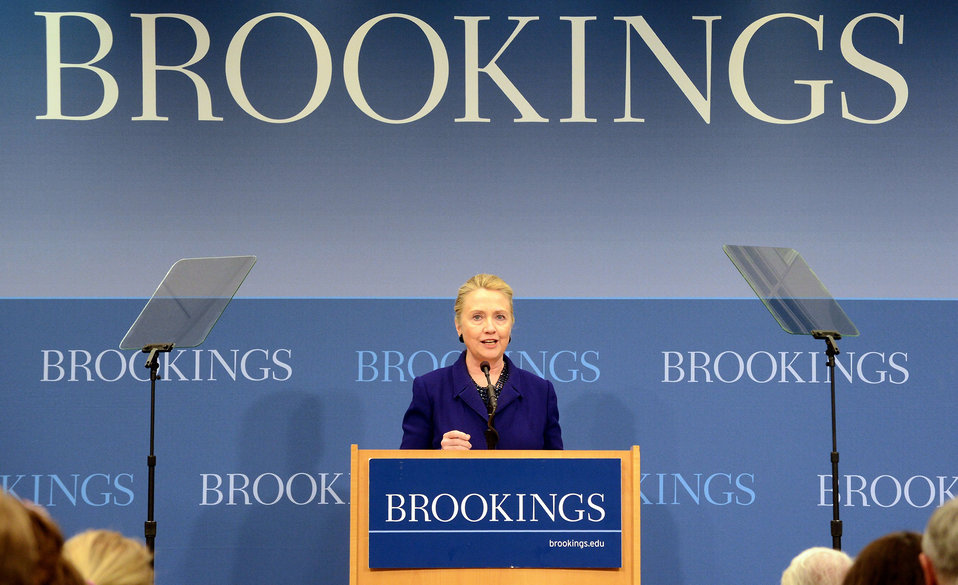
Secretary Clinton Delivers Remarks on the U.S. and Europe: A Revitalized Global Partnership

U.S. Secretary of State Hillary Rodham Clinton delivers remarks on The U.S. and Europe: A Revitalized Global Partnership at the Brookings Institution in Washington, D.C. on November 29, 2012.